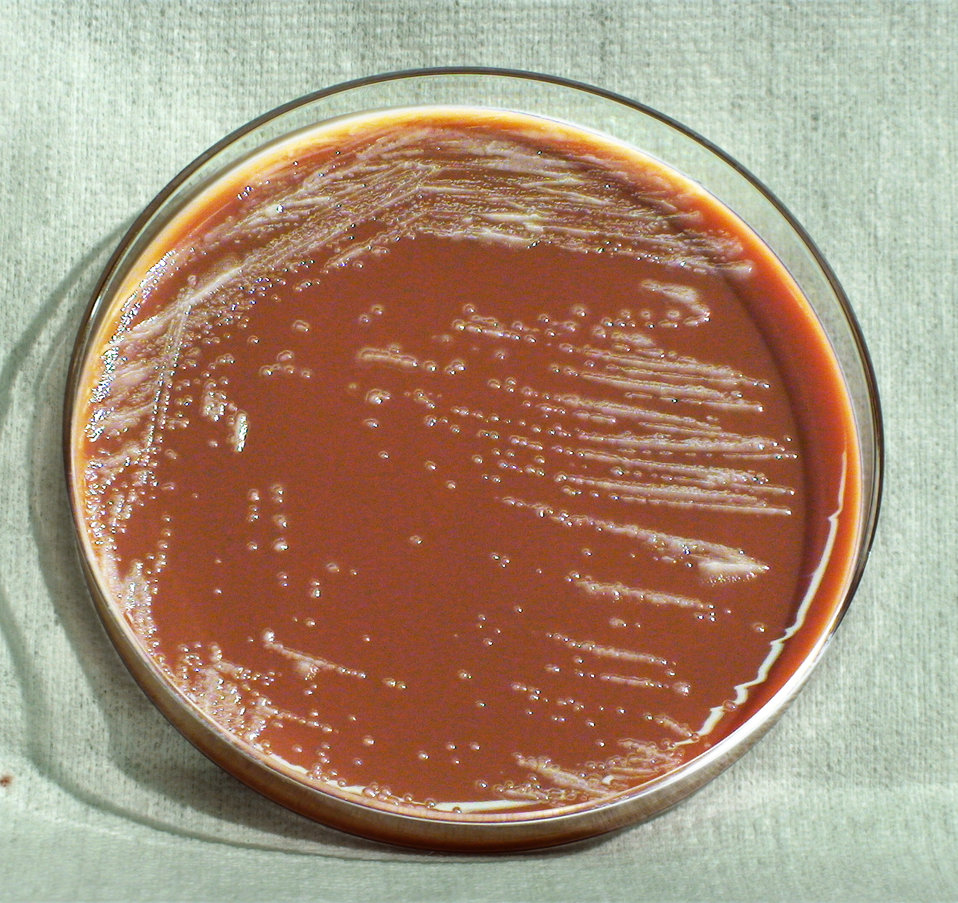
This photograph depicts the colonial morphology displayed by Gram-negative Yersinia pestis bacteria, which was grown on a medium of chocolate agar, for a 48 hour time period, at a temperature of 25�C. Note that PHIL 12469 and 12470 display Y. pestis bacterial colonies grown on the same medium and temperature, but at a greater 72hr time period. See also PHIL 12471 for the appearance of these colonies grown on the same medium, and for the same time period, but at a greater temperature (37�C); PHIL 12472 displaying growth on the same medium, but at a greater time period and temperature, 72hr and 37�C, respectively; PHIL 12473 displaying growth on the same medium, and at the same temperature, but for half the time (24hr).